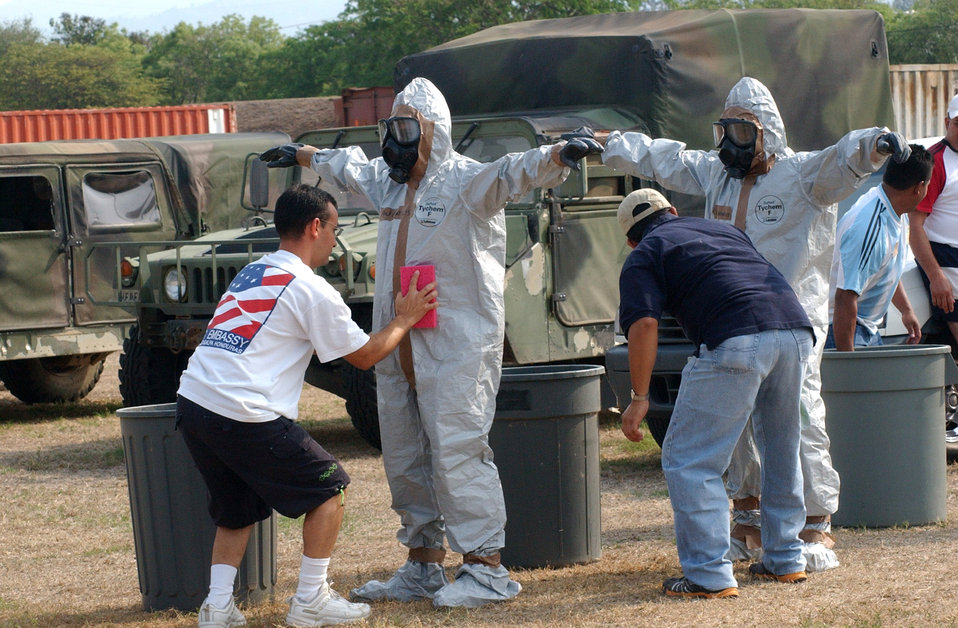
MEDEL offers readiness training to embassy, medical personnel

Abner Radillo and Erling Alvarez process their co-workers through a decontamination line following a major accident response exercise held April 17-19 at Soto Cano Air Base, Honduras. Thirty eight students attended the class, which provided training on first aid techniques and chemical, biological, radiological, nuclear, and explosive readiness training. Radillo is with U.S. Aid and Alvarez is from the U.S. Embassy.